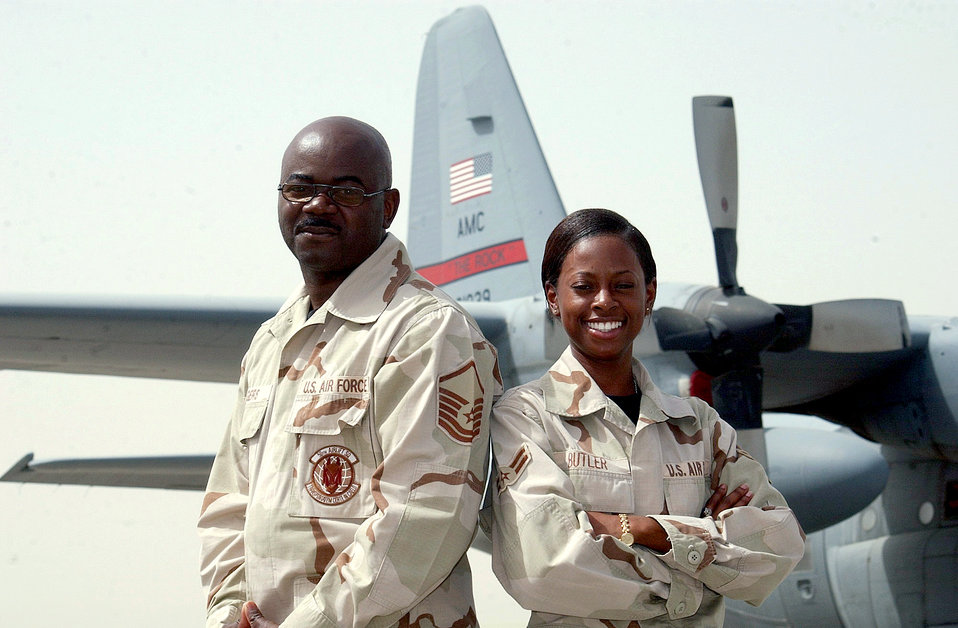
Together again

OPERATION IRAQI FREEDOM -- Master Sgt. Lorenzo Rogers, 320 EMXS, recruited Airman 1st Class Natasha Butler, 772 EAS, in July 2001. Both are now assigned to the 463 AG, Little Rock Rock AFB, Ark., and are currently deployed together.